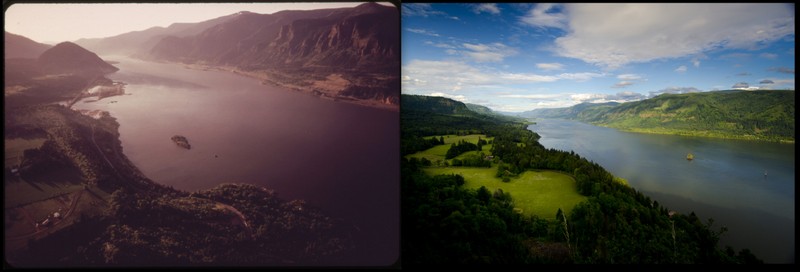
Columbia River Gorge 1973 and 2012

'Then' Documerica Photo: May, 1973 Just after Sunrise From a 7,000 Foot Elevation over the Columbia River Gorge, between the Dalles and the Hood River by David Falconer.
'Now' State of the Environment Photo: June, 2012 View looking east (up river) along the Columbia River Gorge by Scott Butner.

David Falconer documented the fuel shortage in the west during the 1970s, as well as water pollution in the area at the time. Falconer took photos from April 1973 to May 1974 mainly across the states of Oregon and Idaho.

Join in at www.flickr.com/groups/ourenvironment